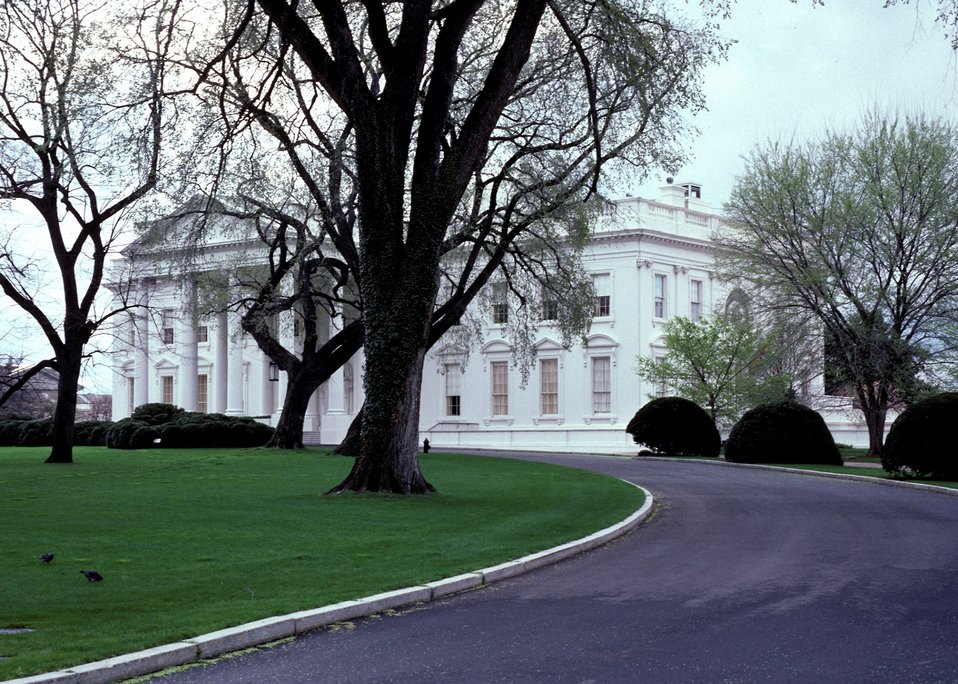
U. S. White House in Washington DC.